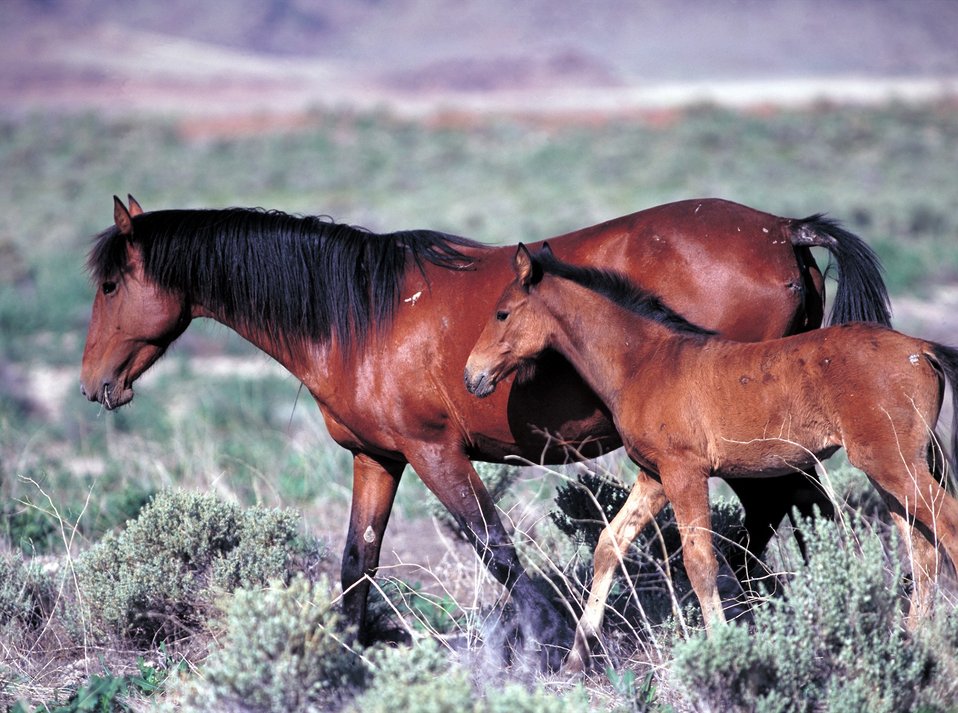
Onaqui Herd near Dugway, Utah.